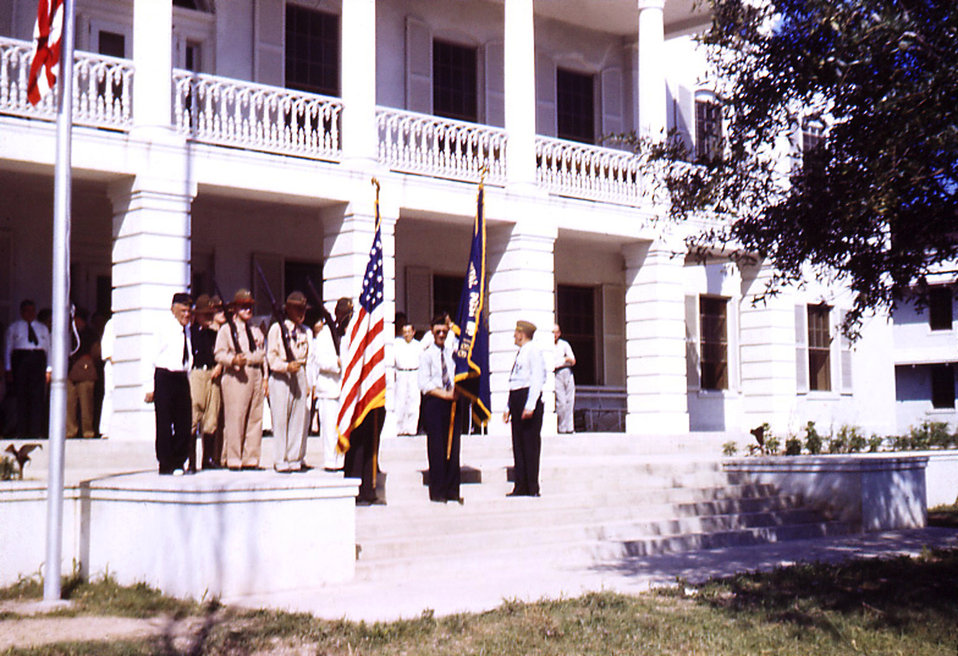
Depicted in this historic image was a Memorial Day celebration on the grounds of the Carville, Louisiana Leprosarium. Memorial Day was considered a very special occasion in which everyone participated. In this particular instance, the local American Legion took part in the march to the cemetery, whereupon, services were conducted by both chaplains.